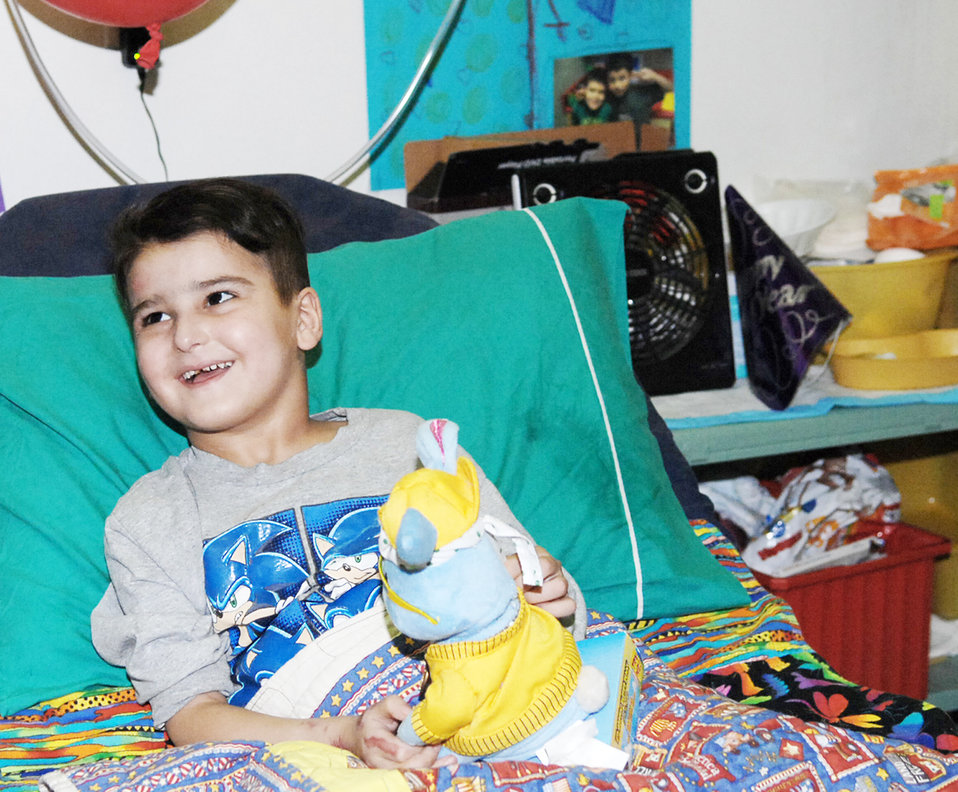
Balad medical team turns tragedy into triumph

Six-year-old Sajad Hany Shaker Mahmud, a survivor of an improvised explosive device attack, laughs as he plays with a birthday gift April 1, 2010, at the Air Force Theater Hospital in Iraq. Sajad celebrated his 6th birthday while recovering at the Air Force Theater Hospital. He received multiple presents and birthday wishes from the medical staff who have taken care of him during his 72-day stay at the hospital.